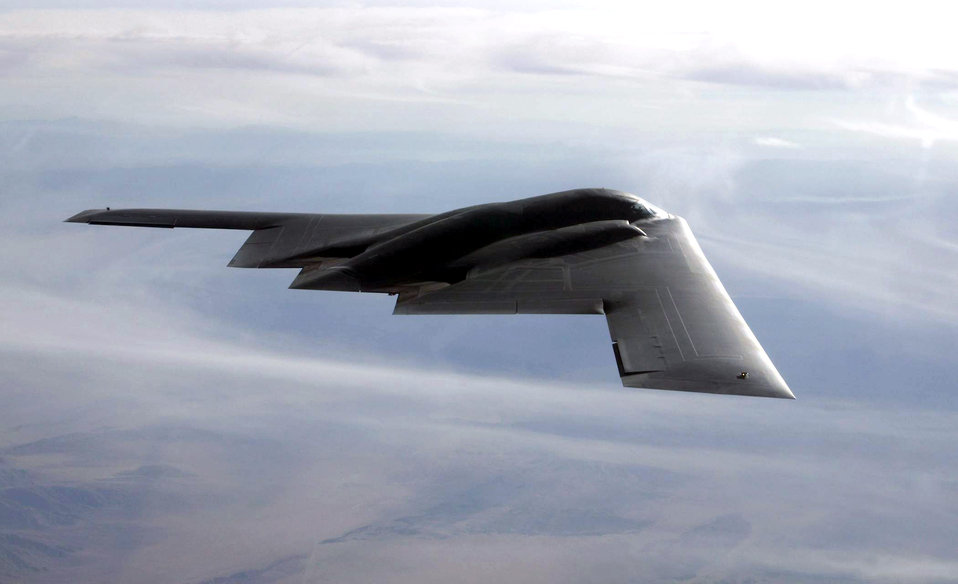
B-2 Spirit

FILE PHOTO -- The B-2 Spirit is a multi-role bomber capable of delivering both conventional and nuclear munitions. A dramatic leap forward in technology, the bomber represents a major milestone in the U.S. bomber modernization program. The B-2 brings massive firepower to bear, in a short time, anywhere on the globe through previously impenetrable defenses.